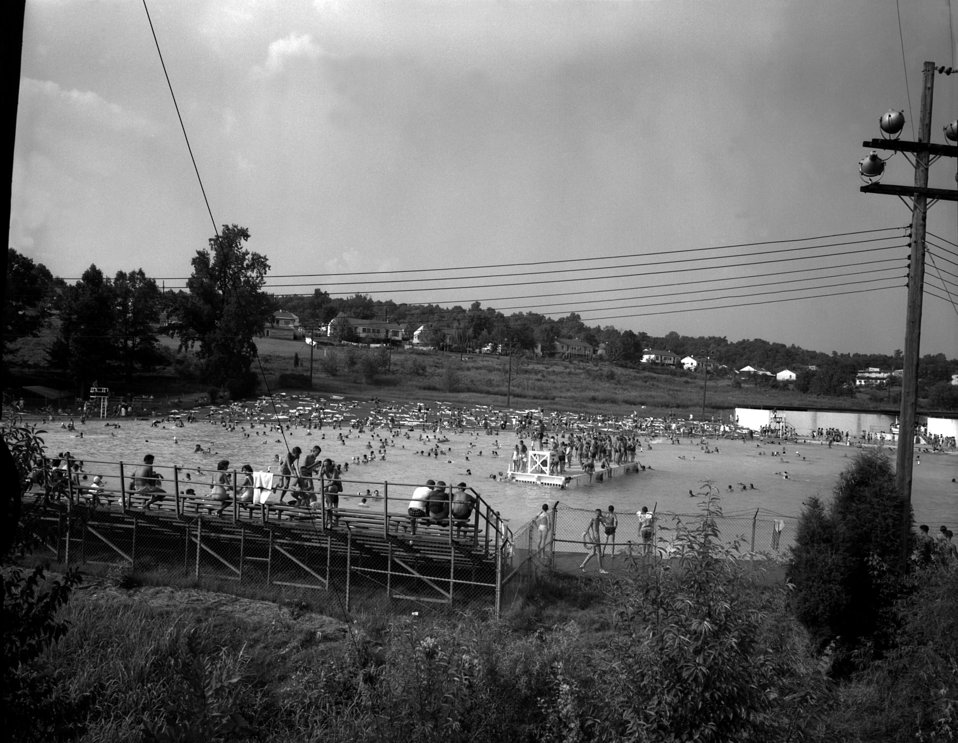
Oak Ridge Swimming Pool Labor Day

60-0868 DOE photo by T. R. Cook

Oak Ridge Tennessee 9/5/1960